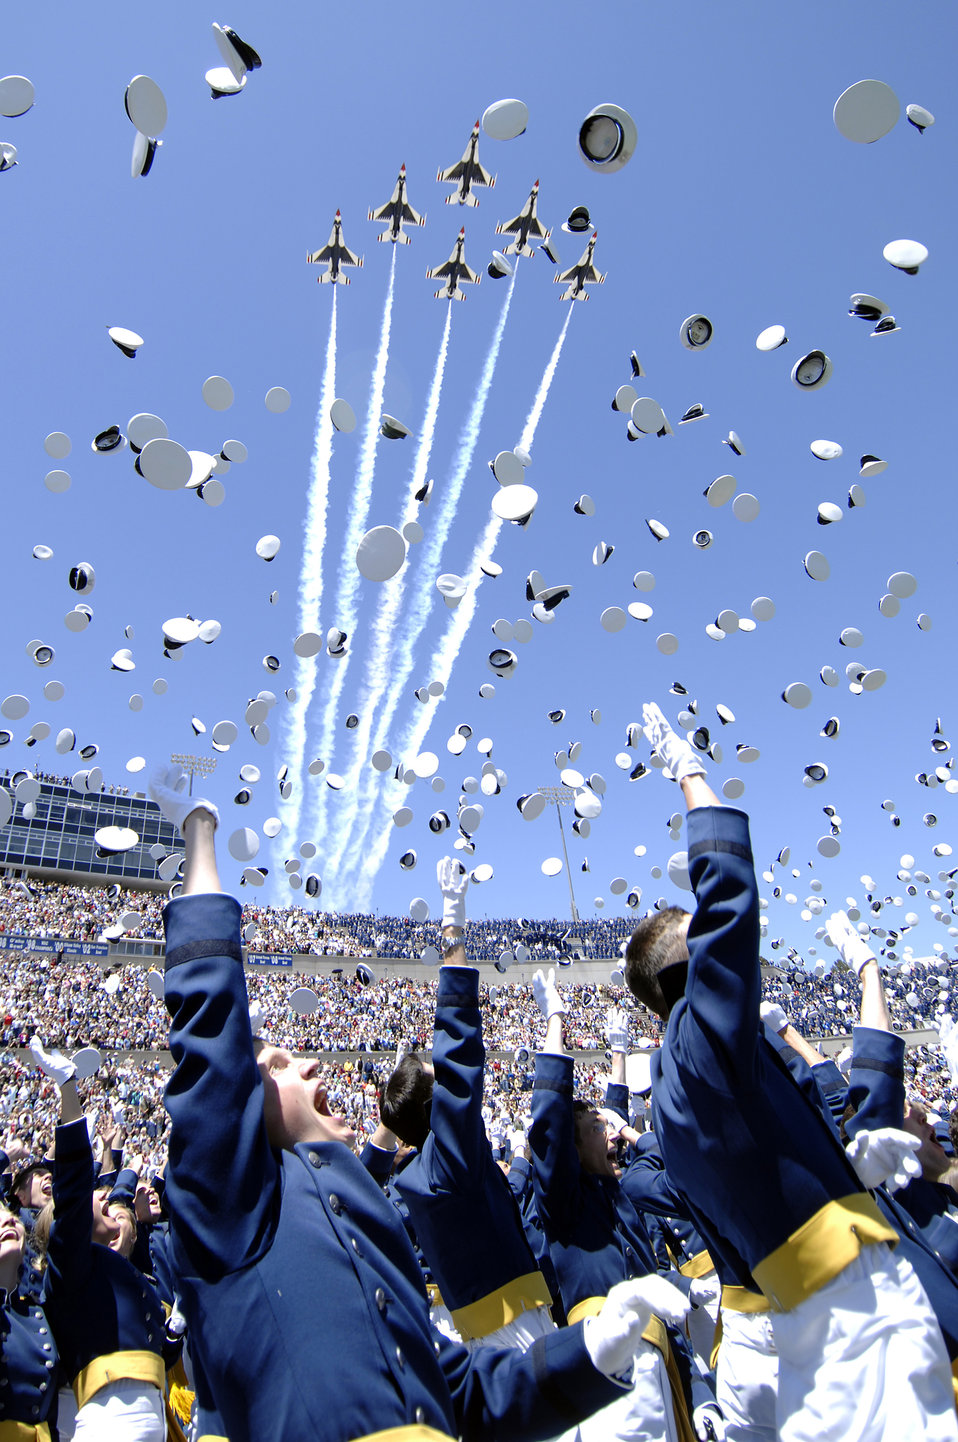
I made it!

Newly commissioned second lieutenants commemorate their achievement by tossing their hats as the Air Force Thunderbirds fly over Falcon Stadium May 27 during the 2009 U.S. Air Force Academy graduation.